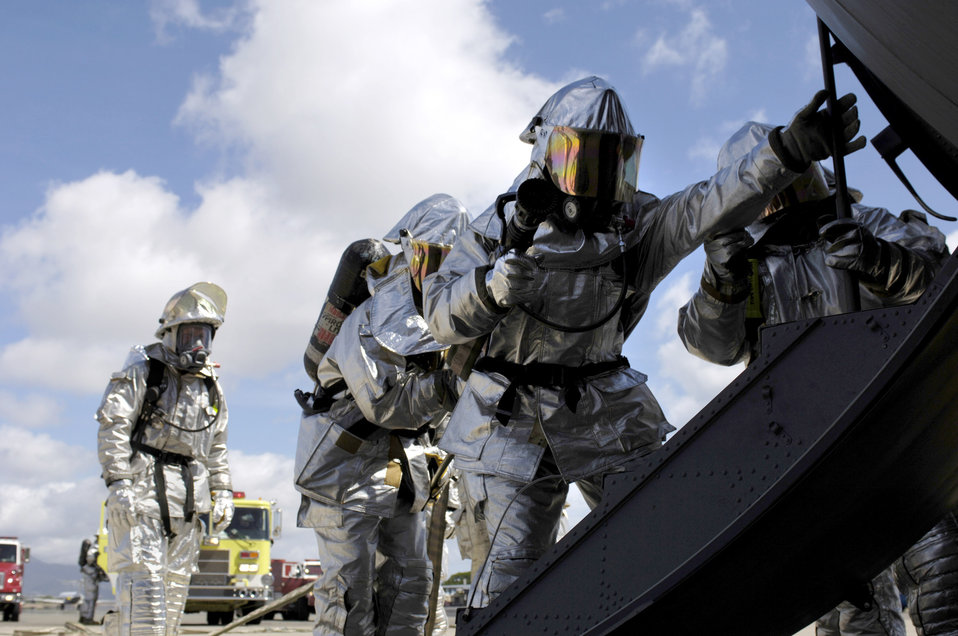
Realistic training

HICKAM AIR FORCE BASE, Hawaii -- Firefighters from the 15th Airlift Wing fire department enter a C-130 Hercules with a simulated flash fire as part of initial response readiness exercise here. The exercise, held Oct. 17, marks the first time the base used an actual C-130 Hercules and aircrew to increase the training's realism. The wing's search and rescue team also took part, entering the aircraft -- from the Hawaii Air National Guard's 154th Wing -- to retrieve and process